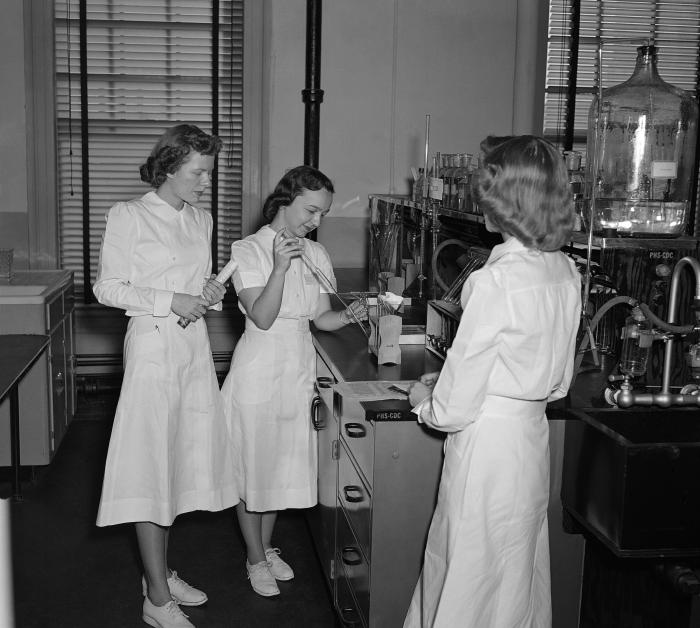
This historic 1951 image depicted two technicians being evaluated on their laboratory technique inside what at the time was the Communicable Disease Center's Pathology Lab, which later, in 1970, became the Center for Disease Control.